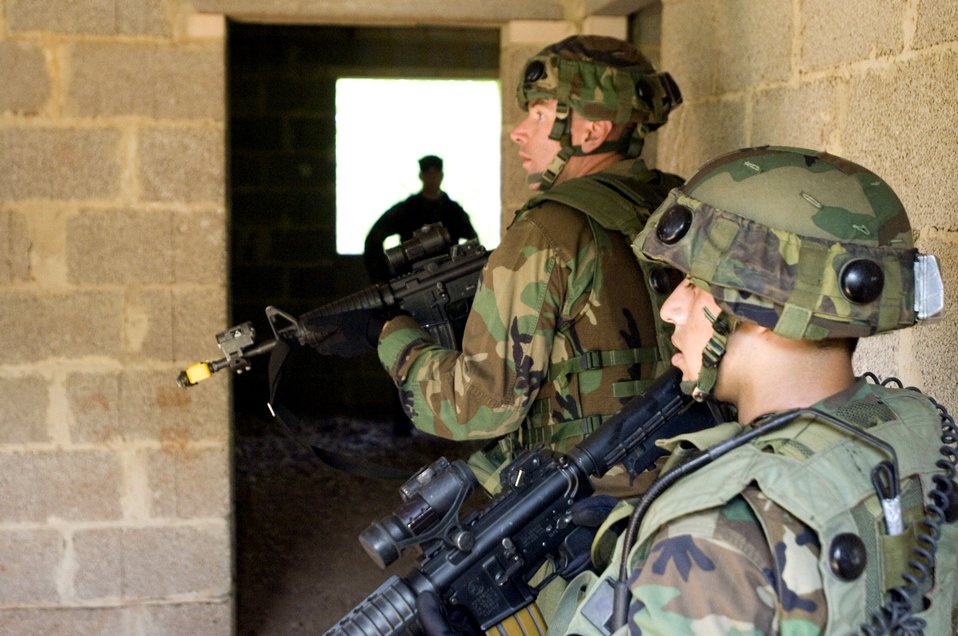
Urban terrain training

First Lt. Raymond Fortner (left) and Airman 1st Class Nicholas Sisouphone search a building for a suspected weapons cache as an instructor watches during military operations in urban terrain training in Baumholder, Germany, on Sunday, May 14, 2006. Training is conducted by Airmen of the 786th Security Force Squadron at Sembach Air Base, Germany. Lieutenant Fortner and Airman Sisouphone are with the 31st Security Forces Squadron at Aviano Air Base, Italy.